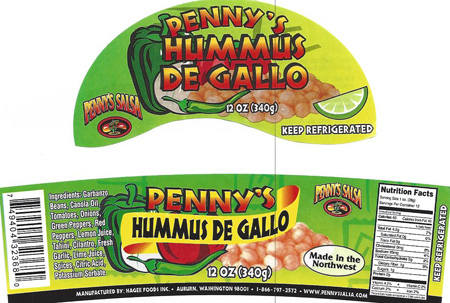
RECALLED – Hummus

July 16, 2013 – Product Recall – Hagee Foods Inc. dba Penny's Salsa Inc. Recalls Hummus Products Because of Possible Health Risk.